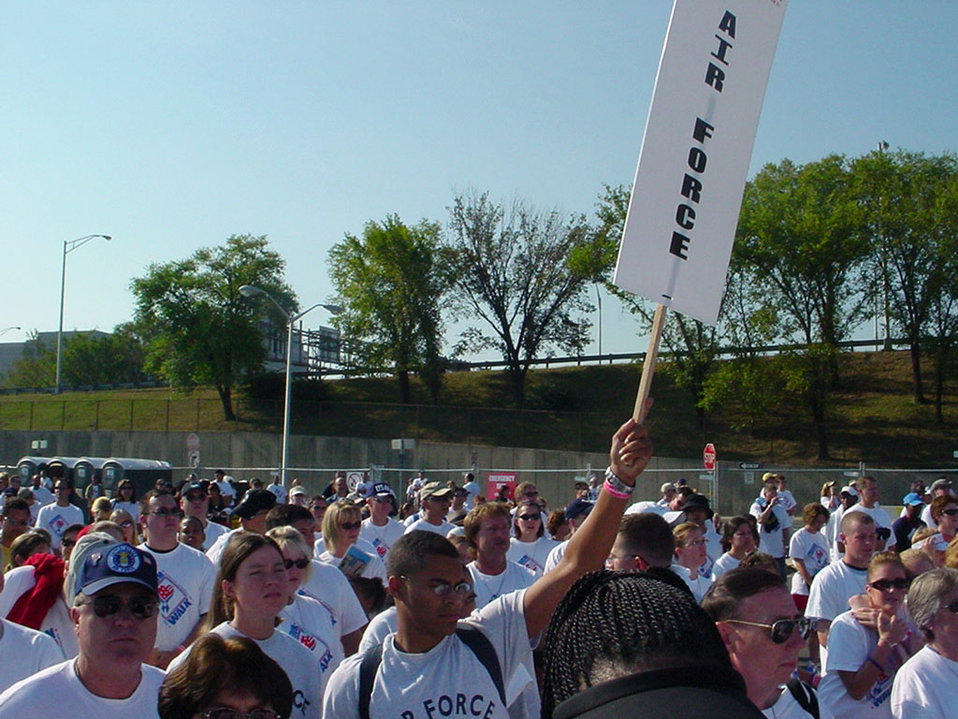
Freedom Walk

WASHINGTON - Airmen show their support during the first